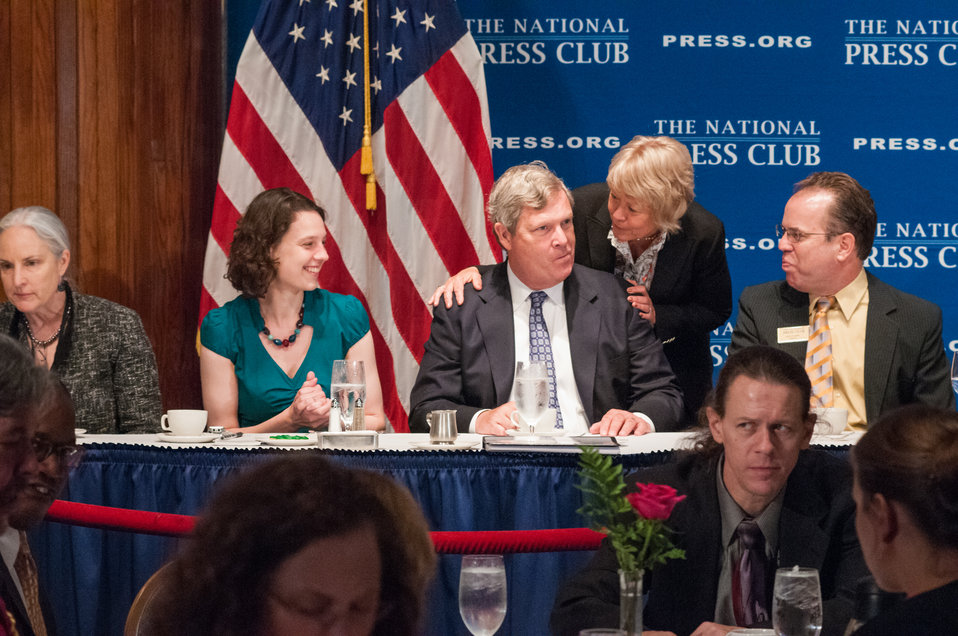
(L to R) Bloomberg News and member of the National Press Club speakers committee Kasia Klimasinska, Agriculture Secretary Tom Vilsack, U. S. Agency for International Development Senior Advisor for International Education Secretary Vilsack’s wife Mrs. Christie Vilsack, and Bloomberg News and National Press Club Treasurer John Hughes share a light moment prior to Secretary Vilsack speaking about the vision for the U.S. Department of Agriculture’s (USDA) future efforts to assist America to adapt to modern environmental challenges at the National Press Club in Washington, D.C. on Wednesday Jun. 5, 2013.